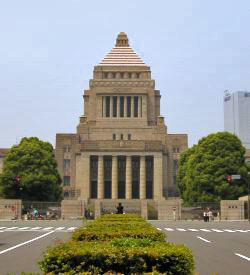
Japanese National Diet Building, Place: View from main entrance; Enhancements: digitally color corrected